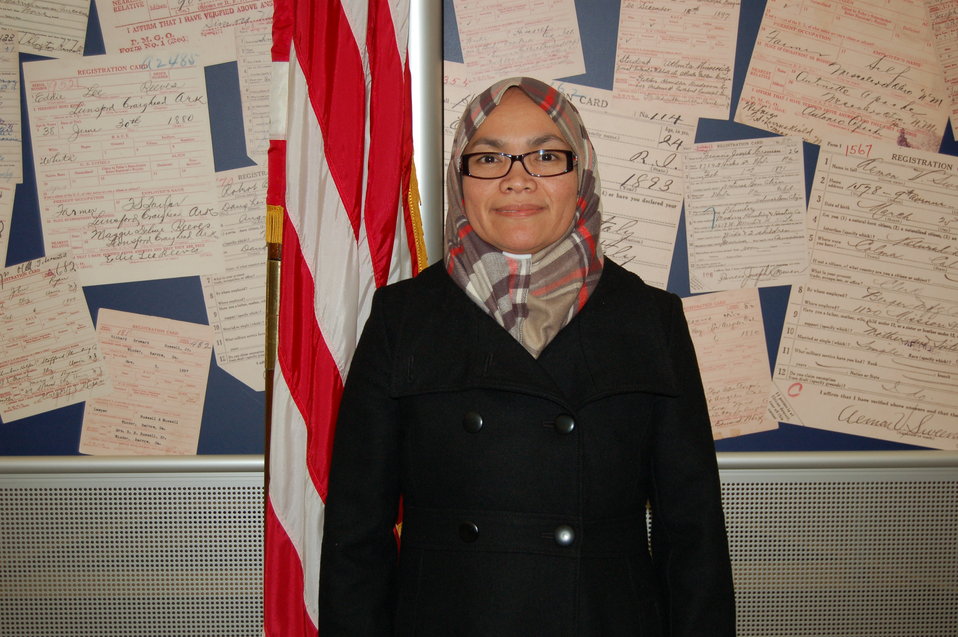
New Citizens